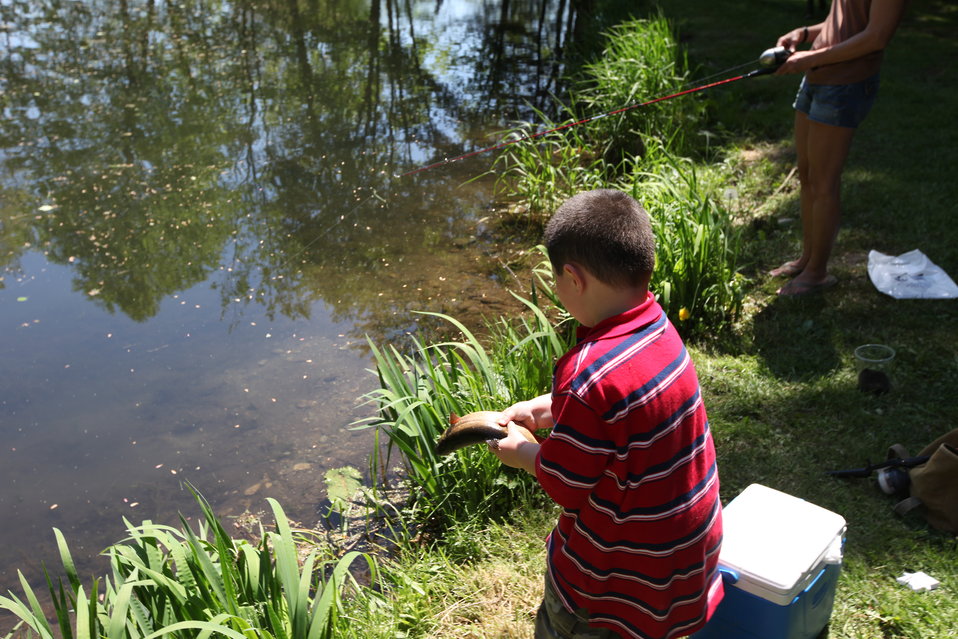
Youth Fishing Derby 2012

Megan Nagel/USFWS